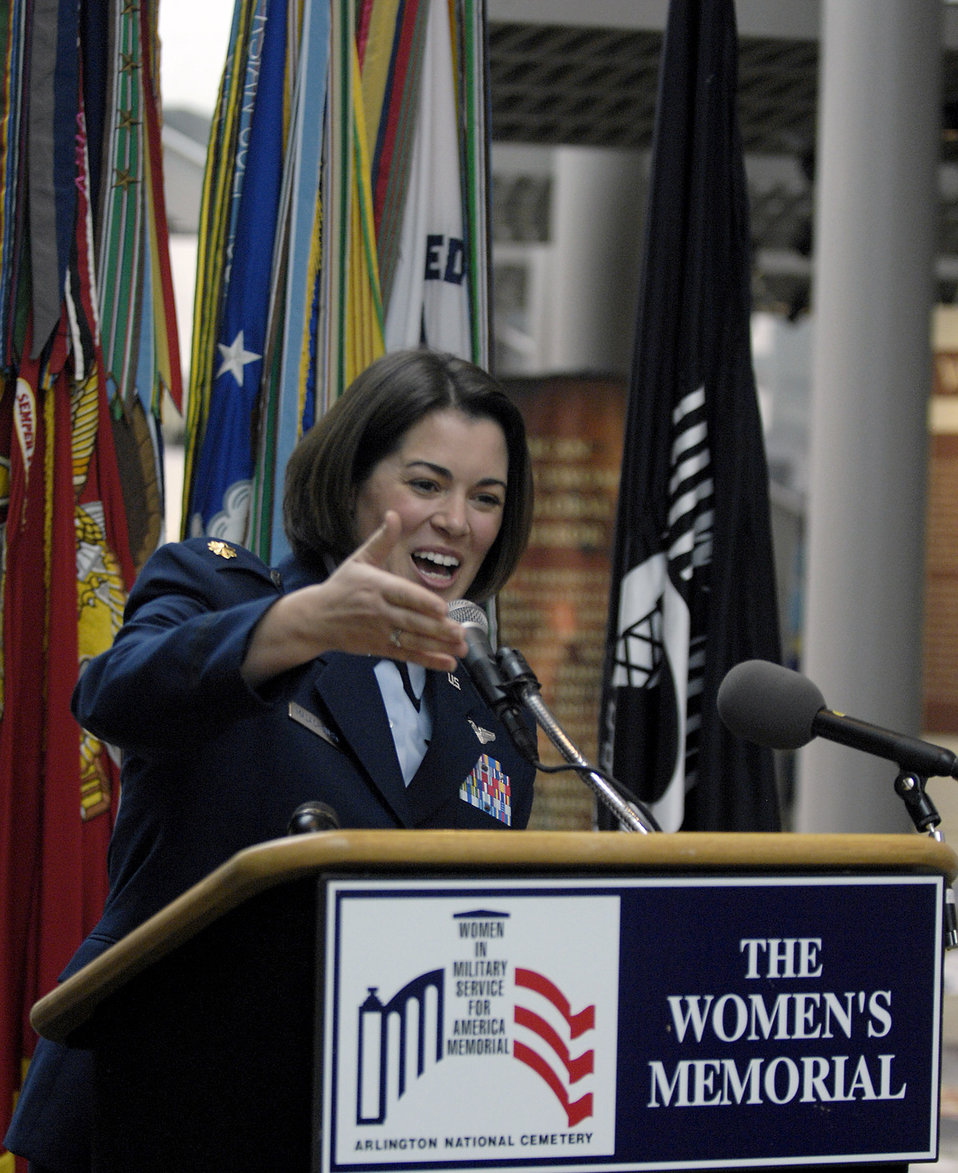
WASP exhibit opens in Arlington

Maj. Nicole Malachowski, the first female pilot to fly with the U.S. Air Force Thunderbirds demonstration team, speaks to World War II Women Airforce Service Pilots during the